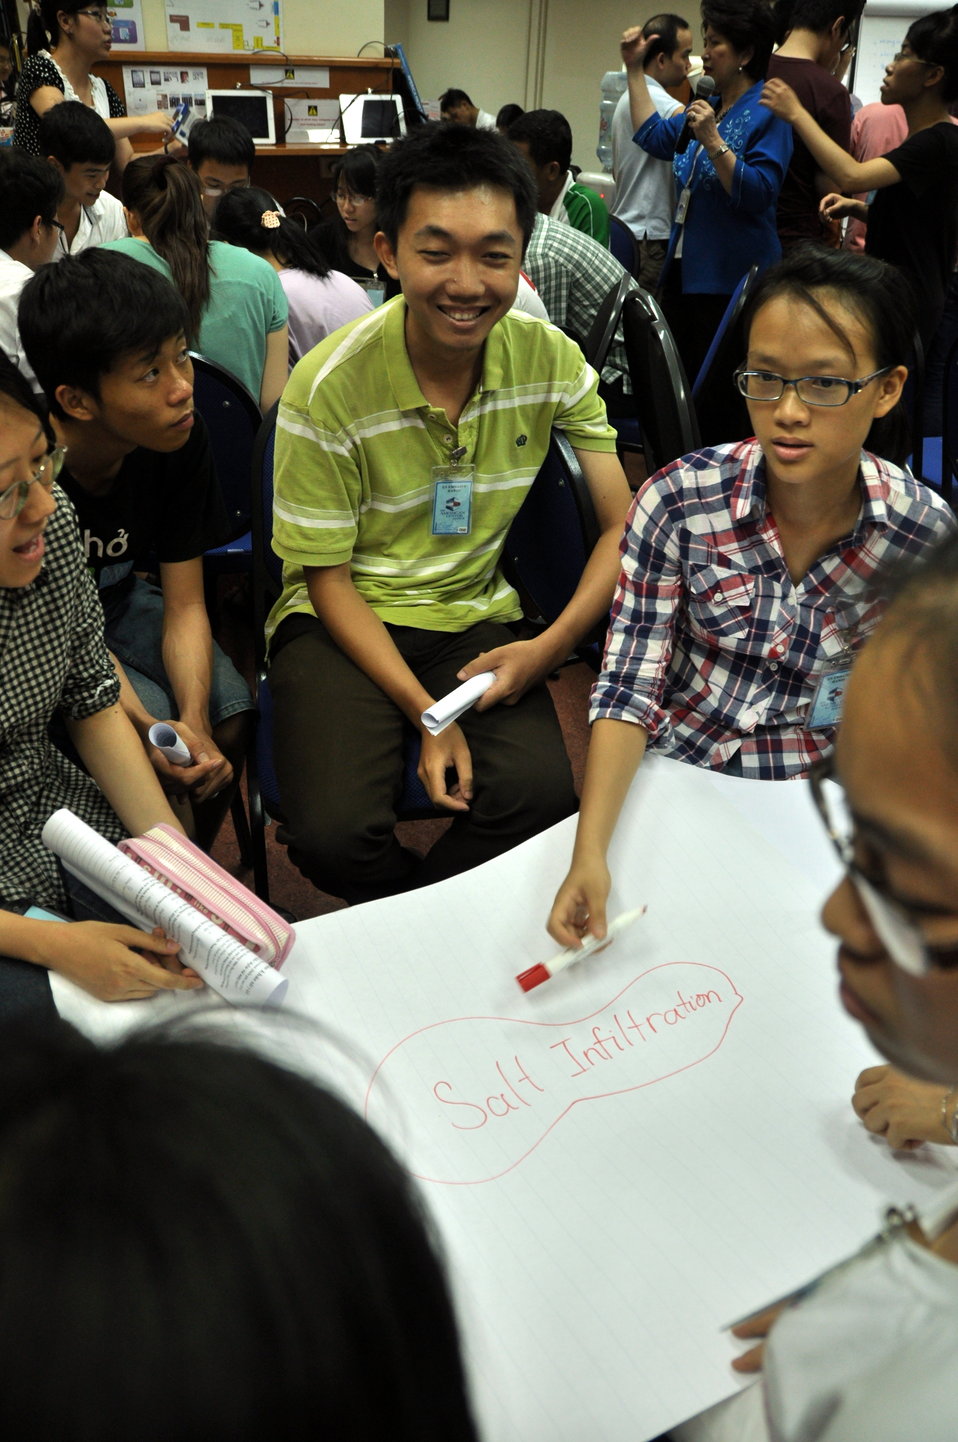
Climate Change Talk at the American Center

Hanoi, May 28, 2013.